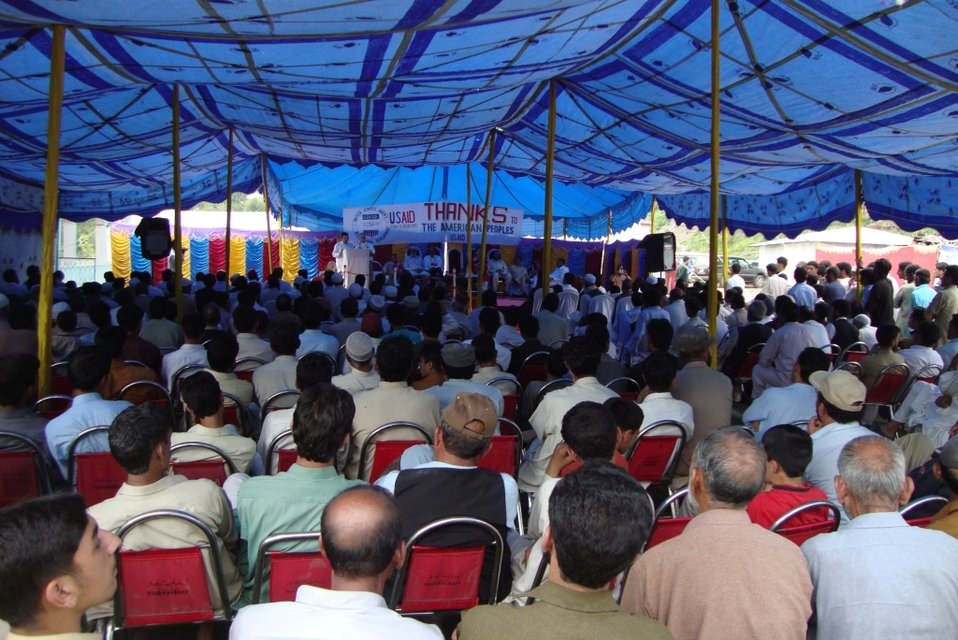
Audience at groundbreaking ceremony